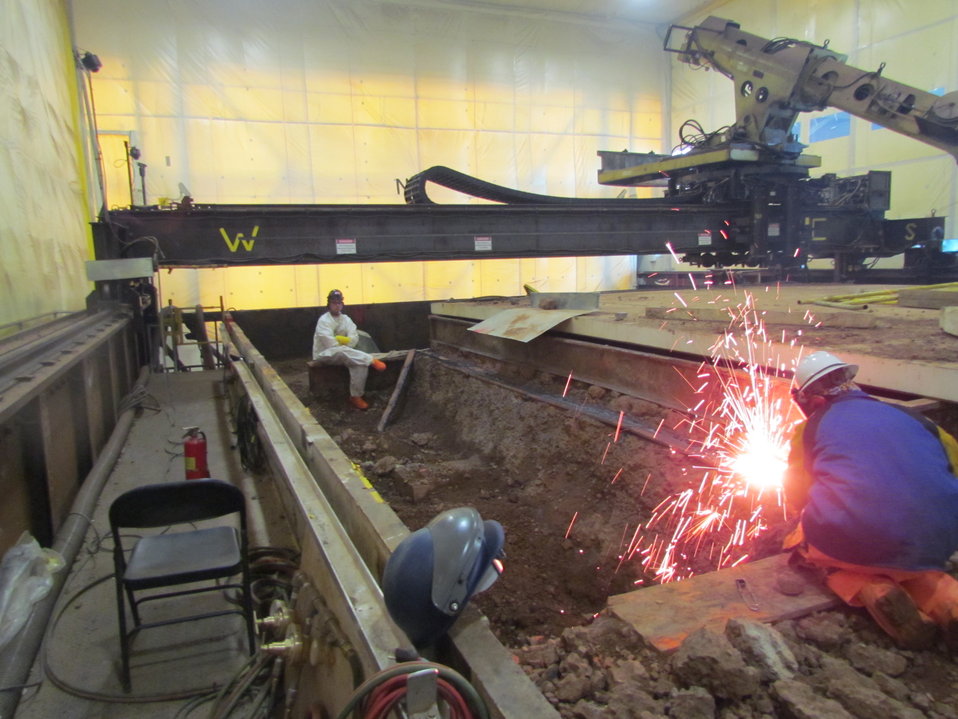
Recovery Act Workers Safely Decommission Brookhaven Nuclear Reactor

Recovery Act workers use a torch cutter to remove a reinforcing bar on the Brookhaven Graphite Research Reactor’s bioshield.